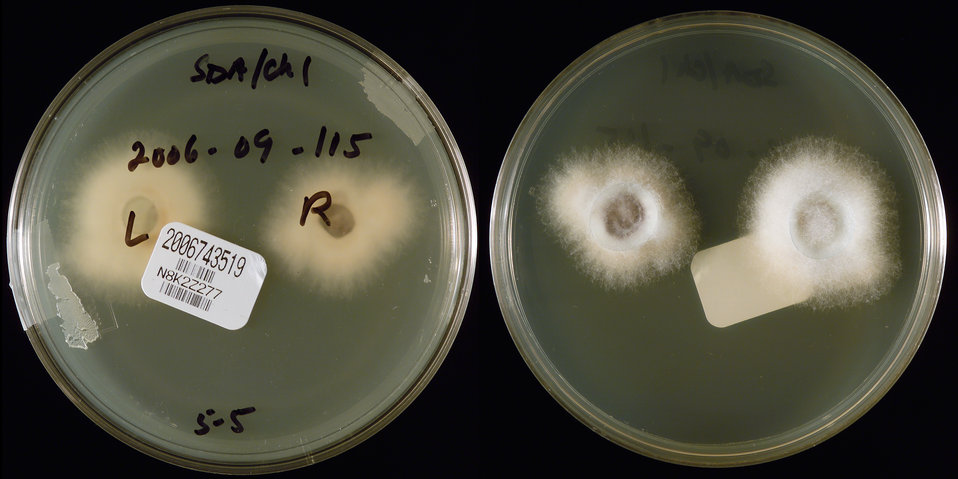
This image depicted two sides of a Petri dish, which had been inoculated with specimens consisting of the right and left contact lenses, visible on the culture medium, obtained from a Puerto Rican Fusarium keratitis-patient, and had subsequently grown a filamentous colony of Fusarium solani Species Complex (FSSC Group# 2) fungal organisms. The type of agar medium in the case of this specimen was Sabouraud Dextrose (SAB). While it is not unusual for Fusarium to cause keratitis, it was the number of affected individuals, which had increased dramatically, predominantly in persons wearing contact lenses, that had warranted this epidemiologic study. The laboratory received cultures which came from two sources: Fusarium spp. isolated from the eyes of patients with fungal keratitis, and cultures from contact lenses, cases and/or lens solution.